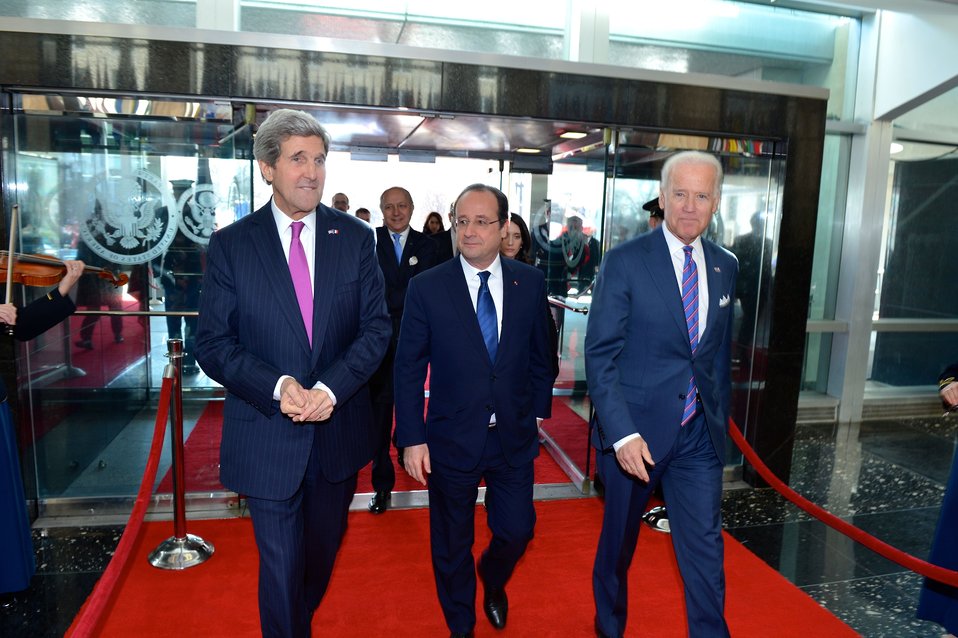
Secretary Kerry and Vice President Biden Welcome French President Hollande to the State Department

U.S. Secretary of State John Kerry and Vice President Joe Biden welcome French President Francois Hollande to the U.S. Department of State for a State Lunch in his honor on February 11, 2014.